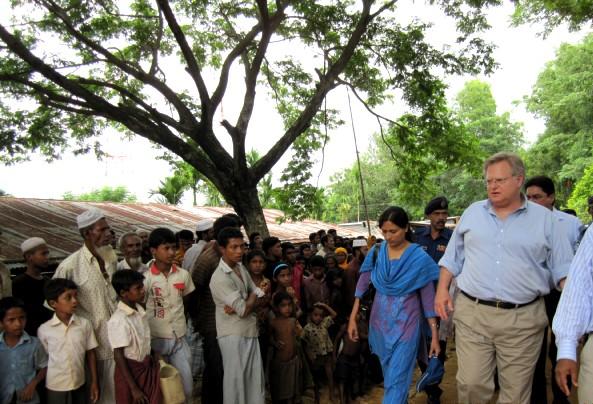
Assistant Secretary Schwartz Visits Refugees in Bangladesh

Assistant Secretary of State for Population, Refugees and Migration Eric Schwartz visits registered and unregistered refugees in Kutupalong camp and makeshift site, home to more 30,500 Rohingya refugees in Bangladesh on June 7, 2011.